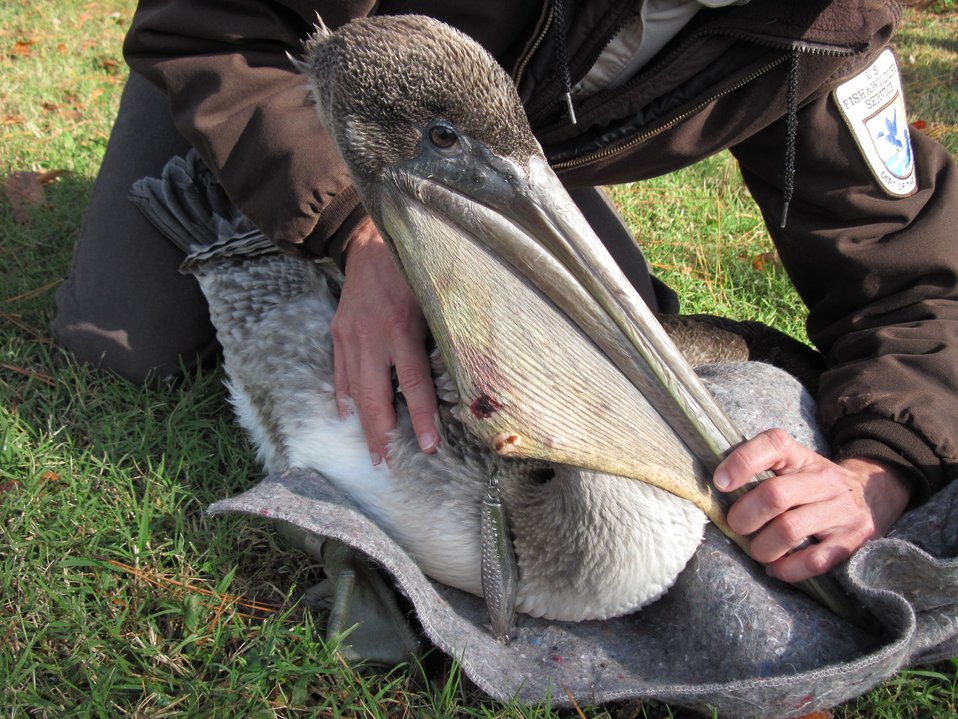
Brown pelican and sinker

Eastern Shore of Virginia Refuge.